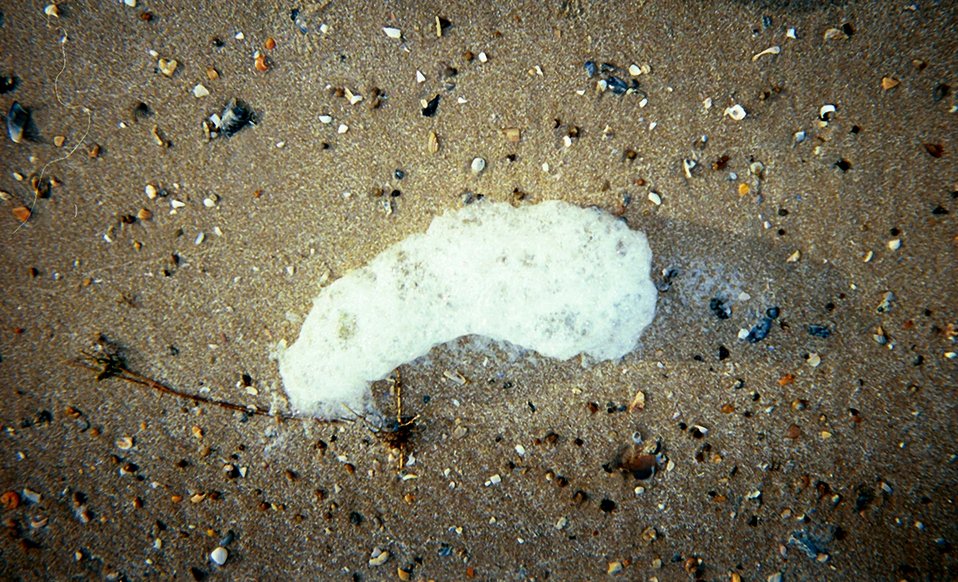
Sea foam left among sea shells.